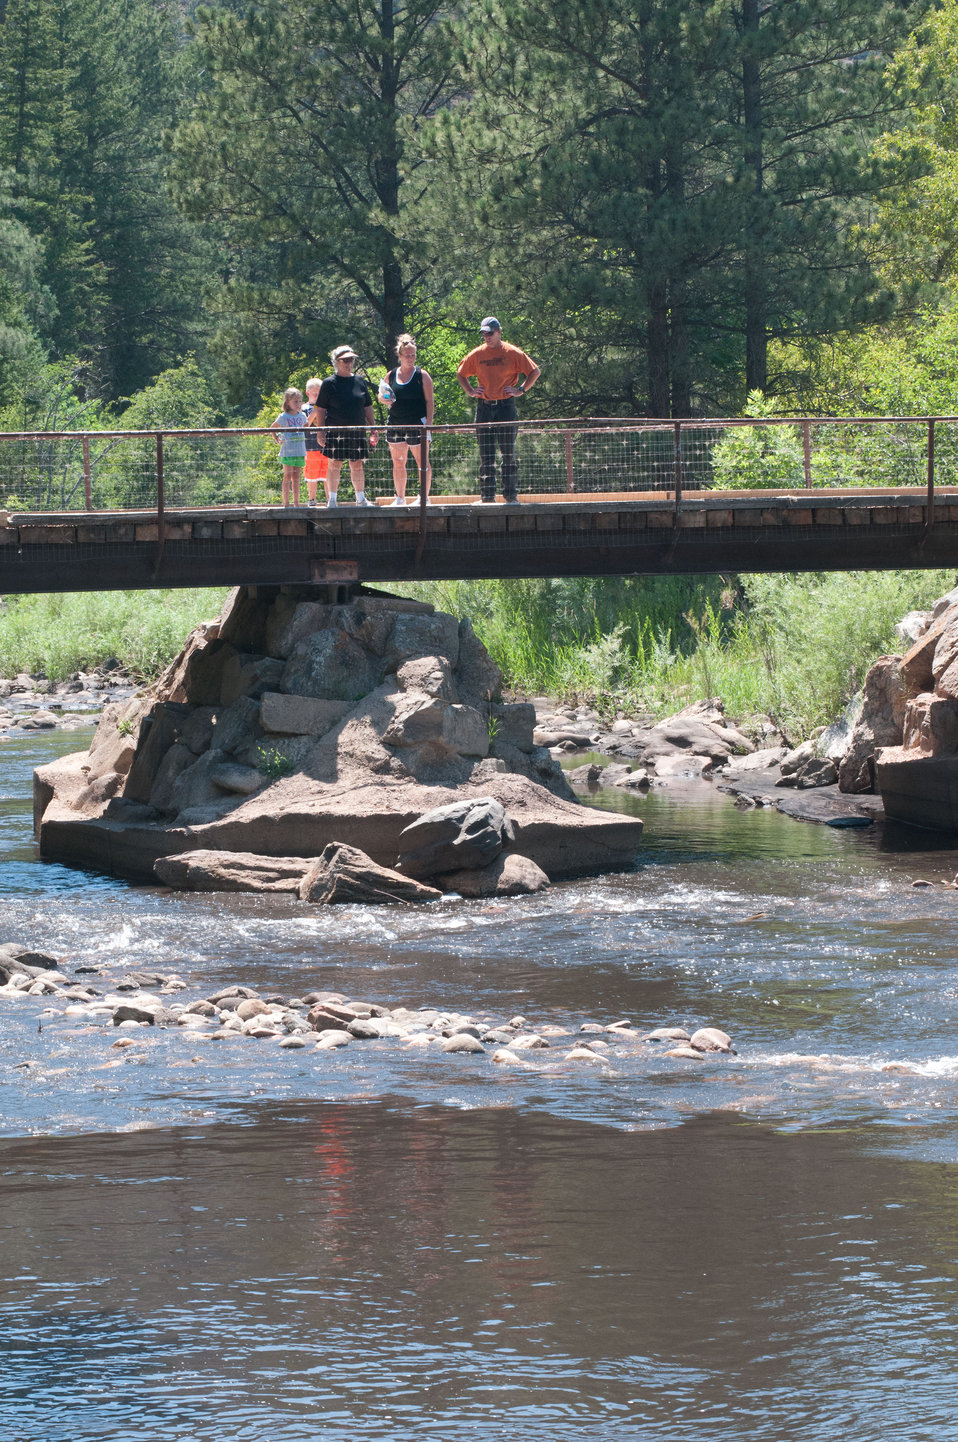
U.S. Department of Agriculture District Conservationist Todd Boldt, orange shirt, talks with Alison, Jackson Temples, Patty Jackson, and Amy Temples, three generations of a family, walking across the bridge to see the effects of the Hewlett Gulch Fire, in the Poudre Canyon area, on Friday, July 20, 2012, near Fort Collins, Colorado. “Talking with people is one of the most important things I do. By talking with them, they will talk to maybe 50 others,“ said Todd Boldt. “Explaining the effects of the fire and the steps that the City of Greeley and USDA are doing, go a long way to educate the public.” Unmitigated runoff have turned the water in this river from clear water to nearly black water heavily laden with ash, silt, and burnt debris that recent thunderstorms have already washed down from the mountainsides. When he dug down into the riverbanks, he found ash 18 inches below the surface, at the water’s edge. At its peak more than 400 firefighters were battling fires pushed by 50 mph winds. When the last embers were cooled, more than 12-square miles lay blacked at a cost of approximately 3.2 million dollars to fight. The aerial distribution of straw has successfully kept nearby Seaman Reservoir clean for the drinking water of the City of Greeley. Forest Service lands receive straw, while private and other lands receive a seed mix and straw to promote ground cover plant growth on ash-covered lands. In total, 1,800 tons of straw will be applied during the 14-day operation. One quarter of the cost was paid by the City of Greeley and the U.S. Department of Agriculture funded the remainder.